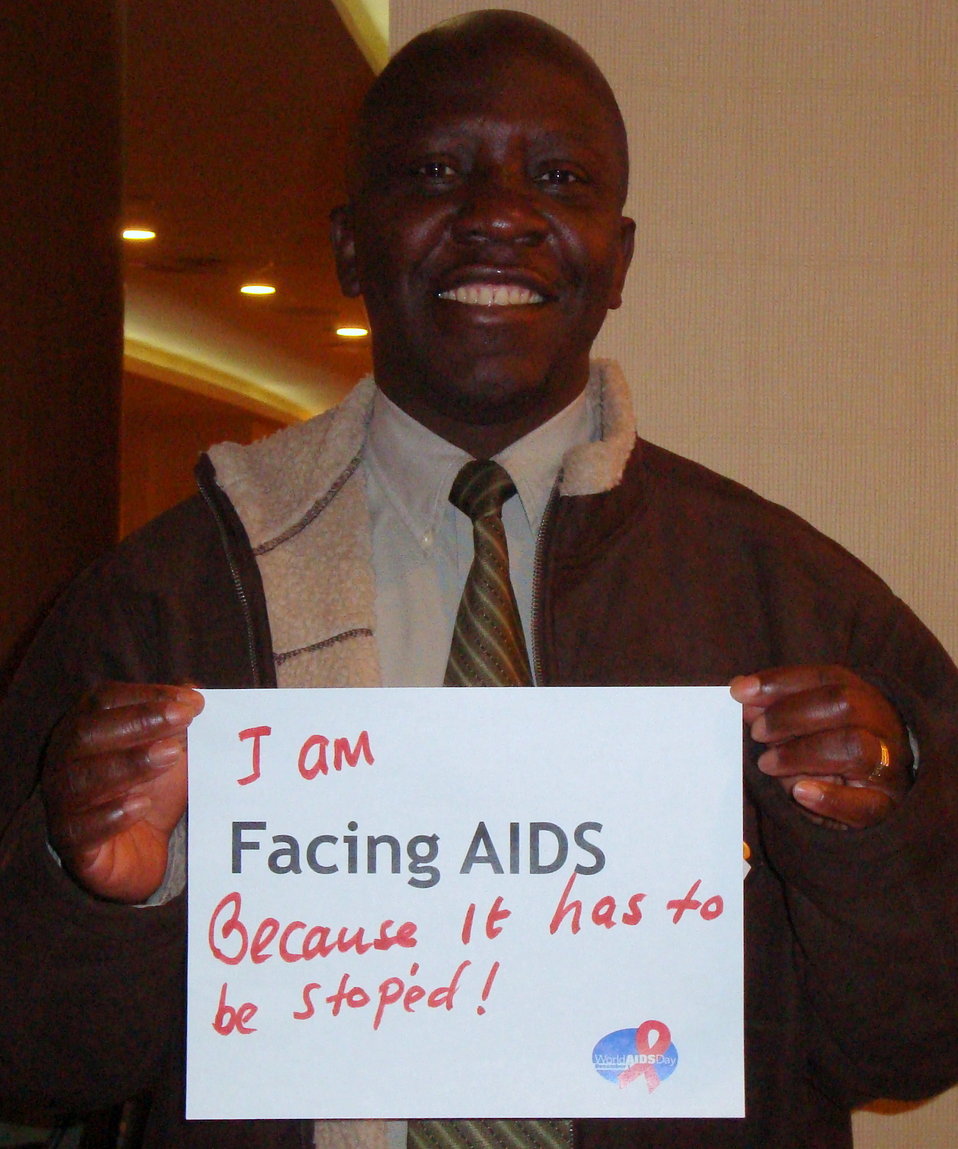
FacingAIDSCampaign 024